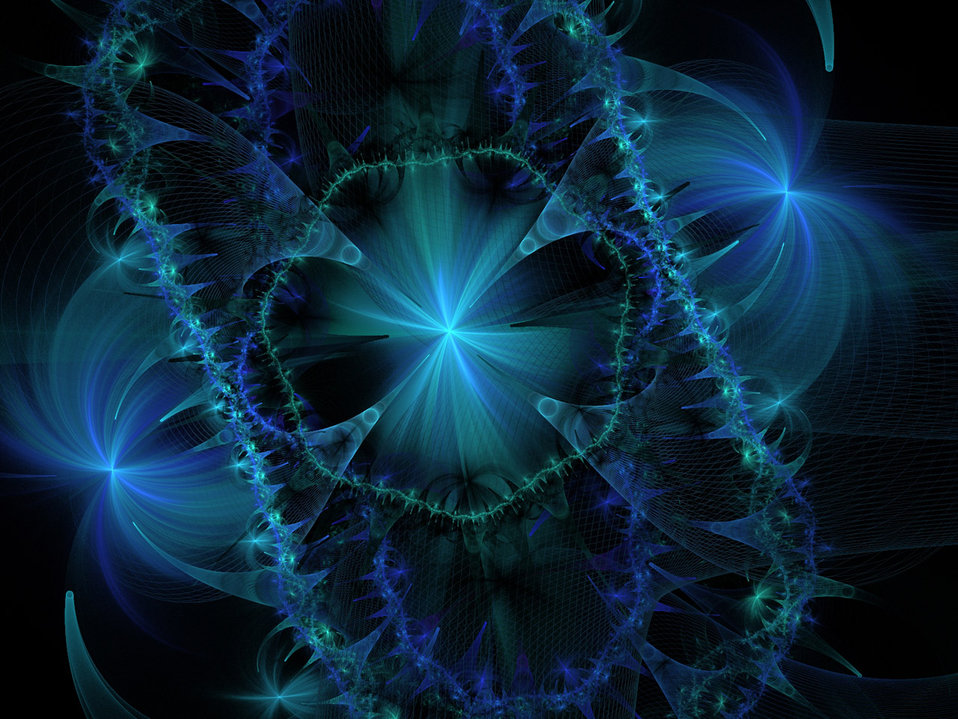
Beautiful blue

A nice fractal in blues.